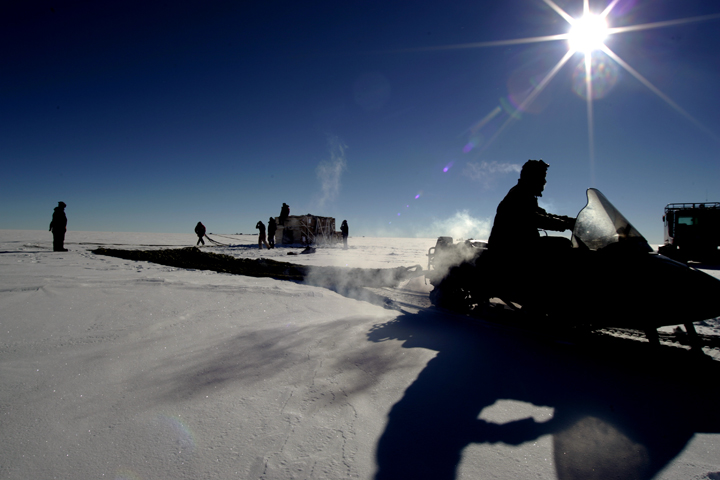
C-17 makes its first South Pole airdrop

Members of the National Science Foundation wintering in the Antarctic retrieve supplies airdropped by a C-17 Globemaster III Dec. 20. Airmen from the 62nd and 446th Airlift Wings at McChord Air Force Base, Wash., delivered 70 tons of supplies to the team. The mission was a